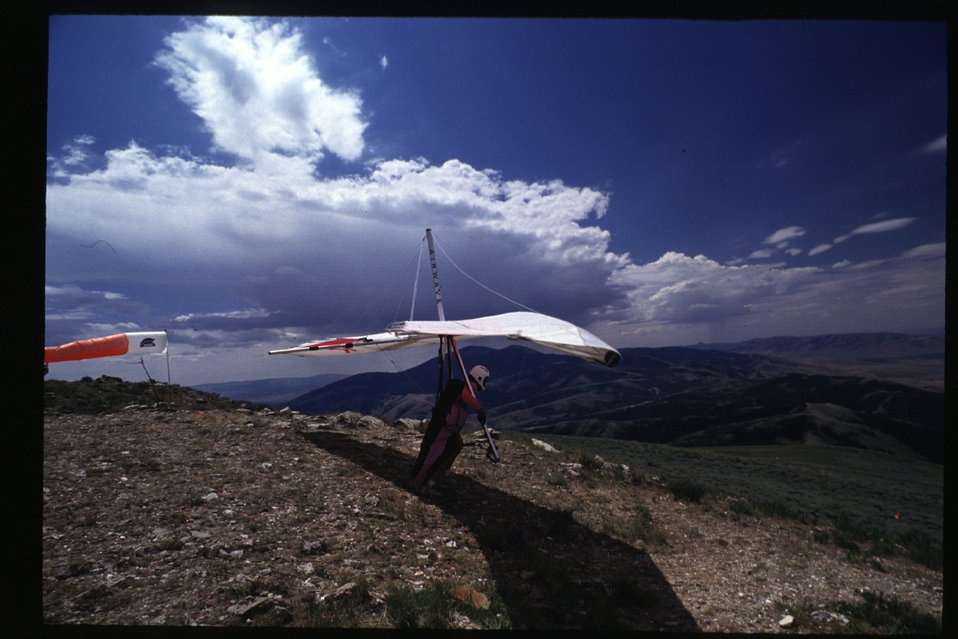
Hang Gliders on King Mountain Arco Idaho Idaho Falls Field Office USRD Upper Snake River District